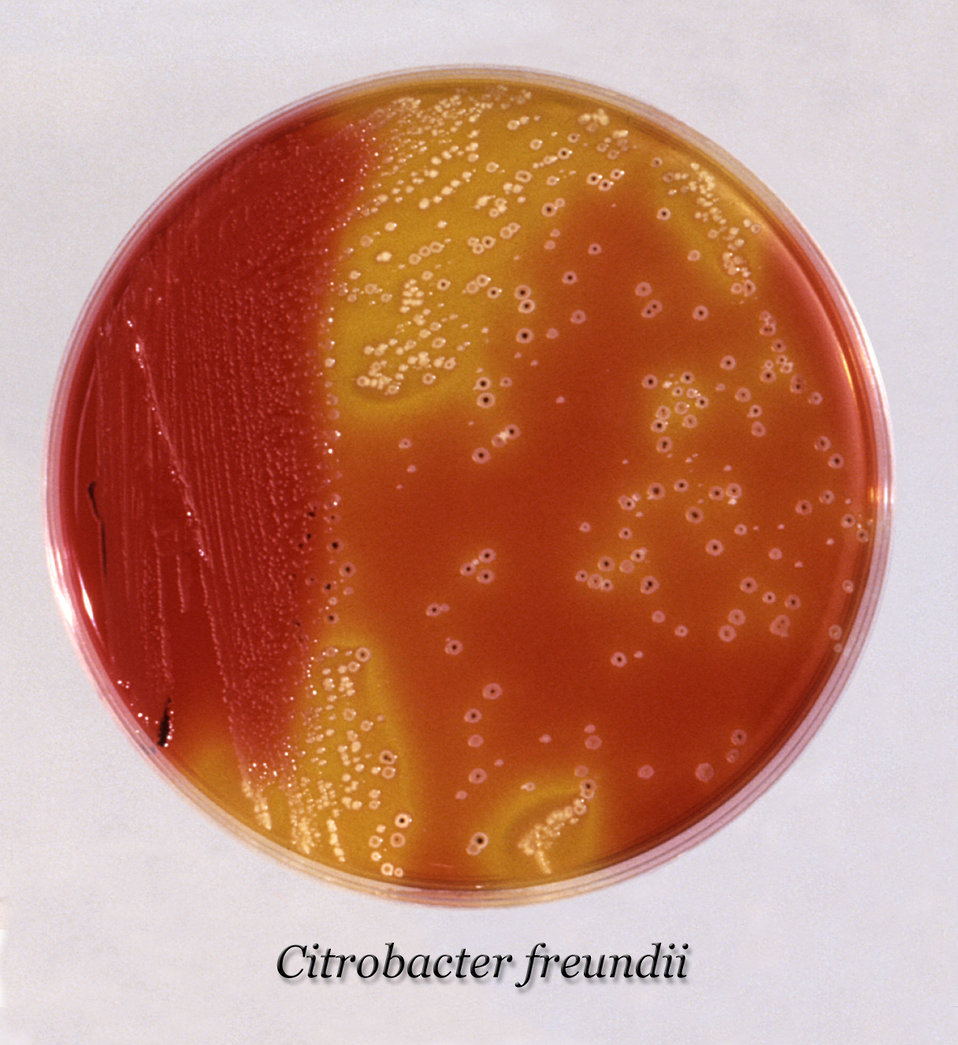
After 24 hours, this inoculated XLD agar culture plate cultivated colonial growth of Gram-negative Citrobacter freundii bacteria.